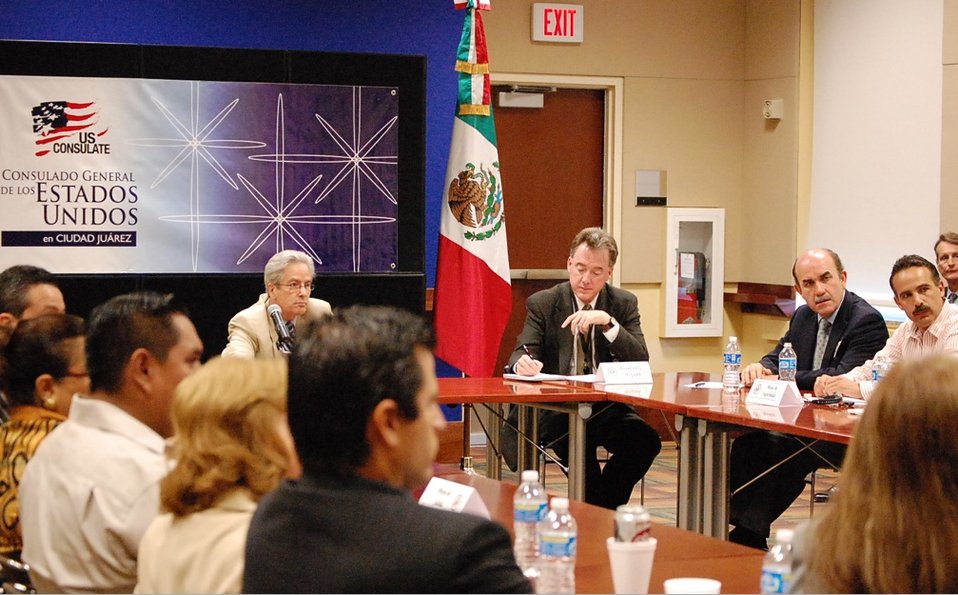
Assistant Secretary Valenzuela Participates in a Working Group

U.S. Assistant Secretary for Western Hemisphere Affairs Arturo Valenzuela participates in a working group for the Mexican federal socio-economic development initiative “Todos Somos Juarez,' in Juarez, Mexico, on June 16, 2010.